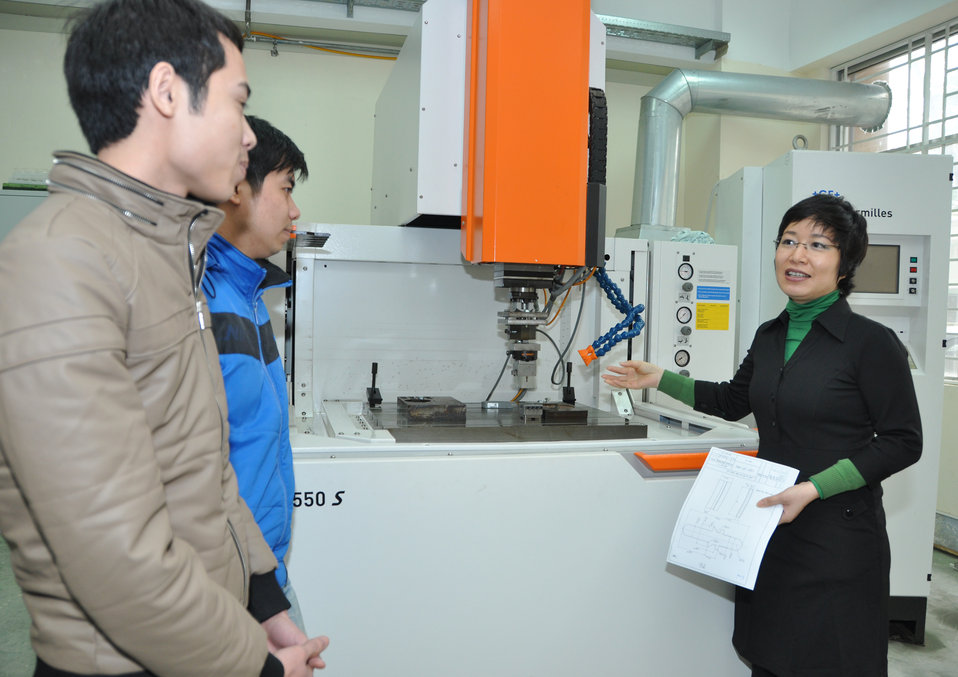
HEEAP faculty participant Dr.Nguyen Thi Hong Minh at the Hanoi University of Science and Technology (HUST)

Visit with Dr. Ir. Nguyen thi Hong Minh, Vice Dean, Internaitonal and Students Affairs, School of Mechnical Engineering -- Material Cutting and Industrial Instrument Department